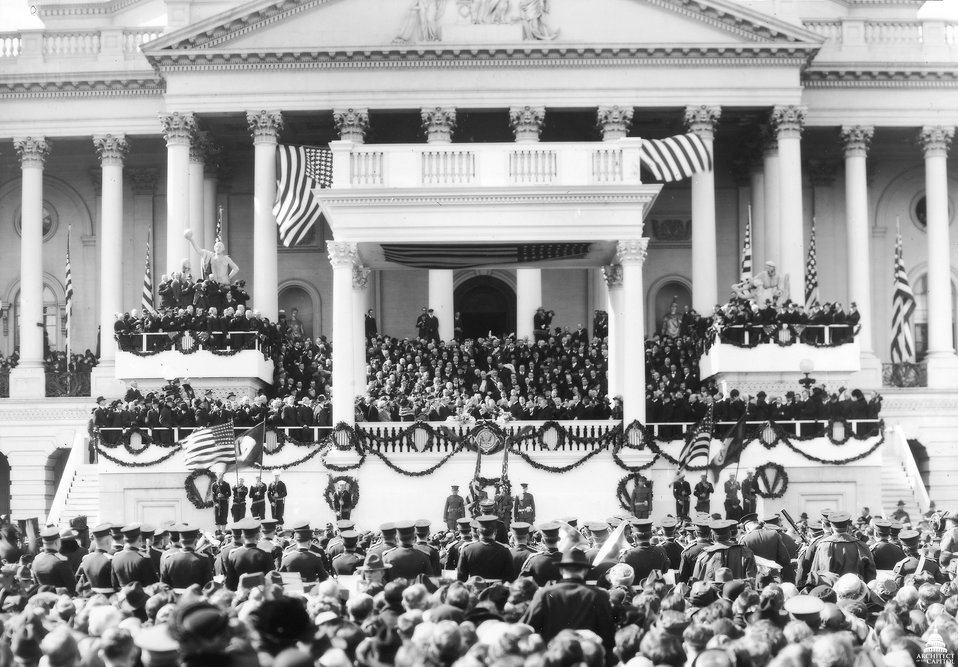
Inauguration of President Warren G. Harding

Chief Justice Edward White gives the Oath of Office to Warren Harding on March 4, 1921 on the East Front of the